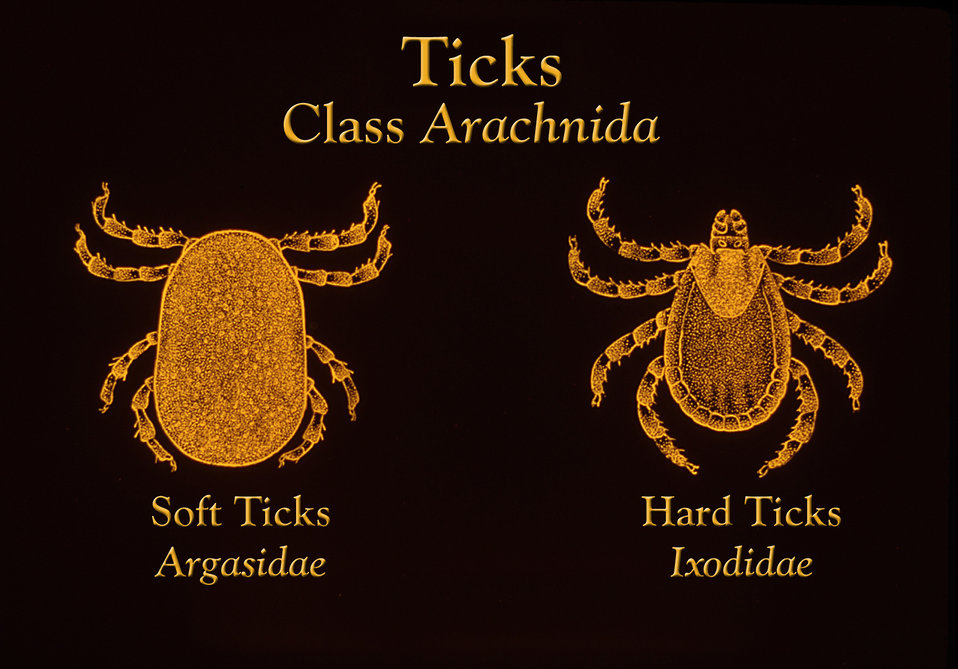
This drawing shows the morphologic differences between soft ticks, Argasidae, and hard ticks, Ixodidae.